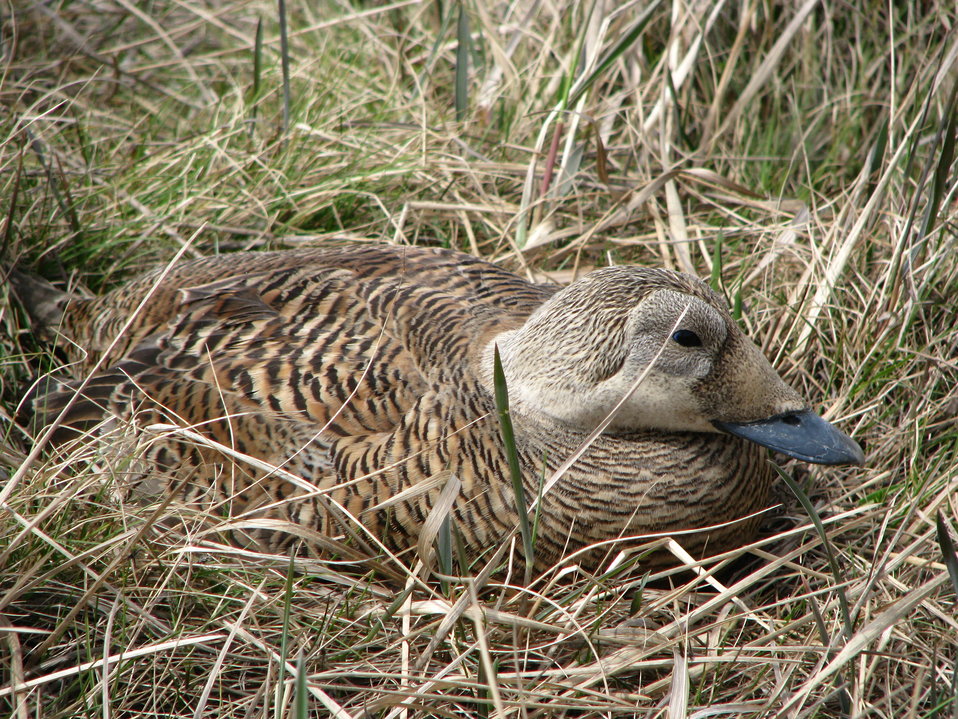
Spectacled Eider incubating

Yukon Delta NWR